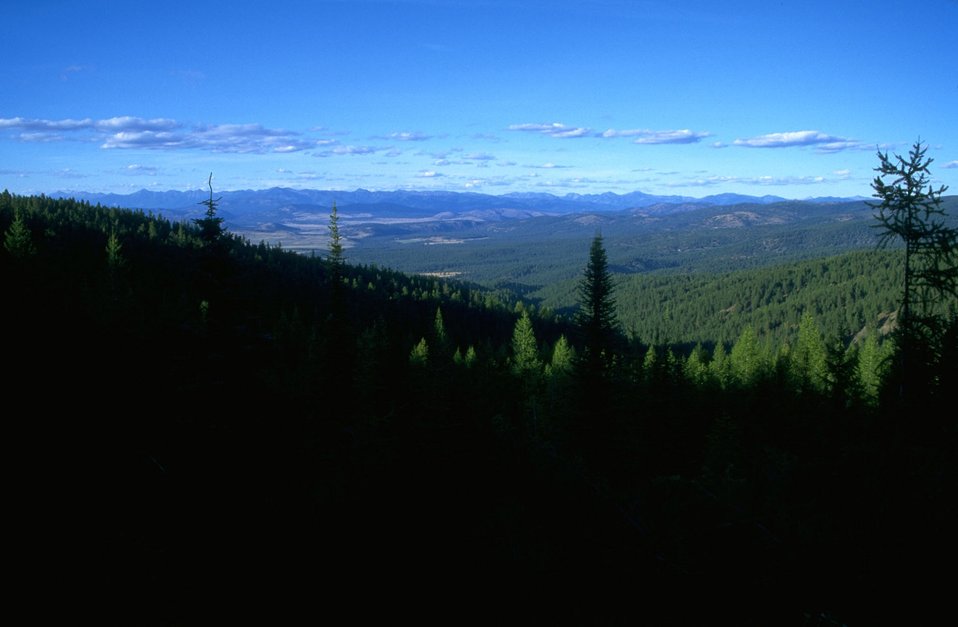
Garnet Back Country Byway--view from overlook